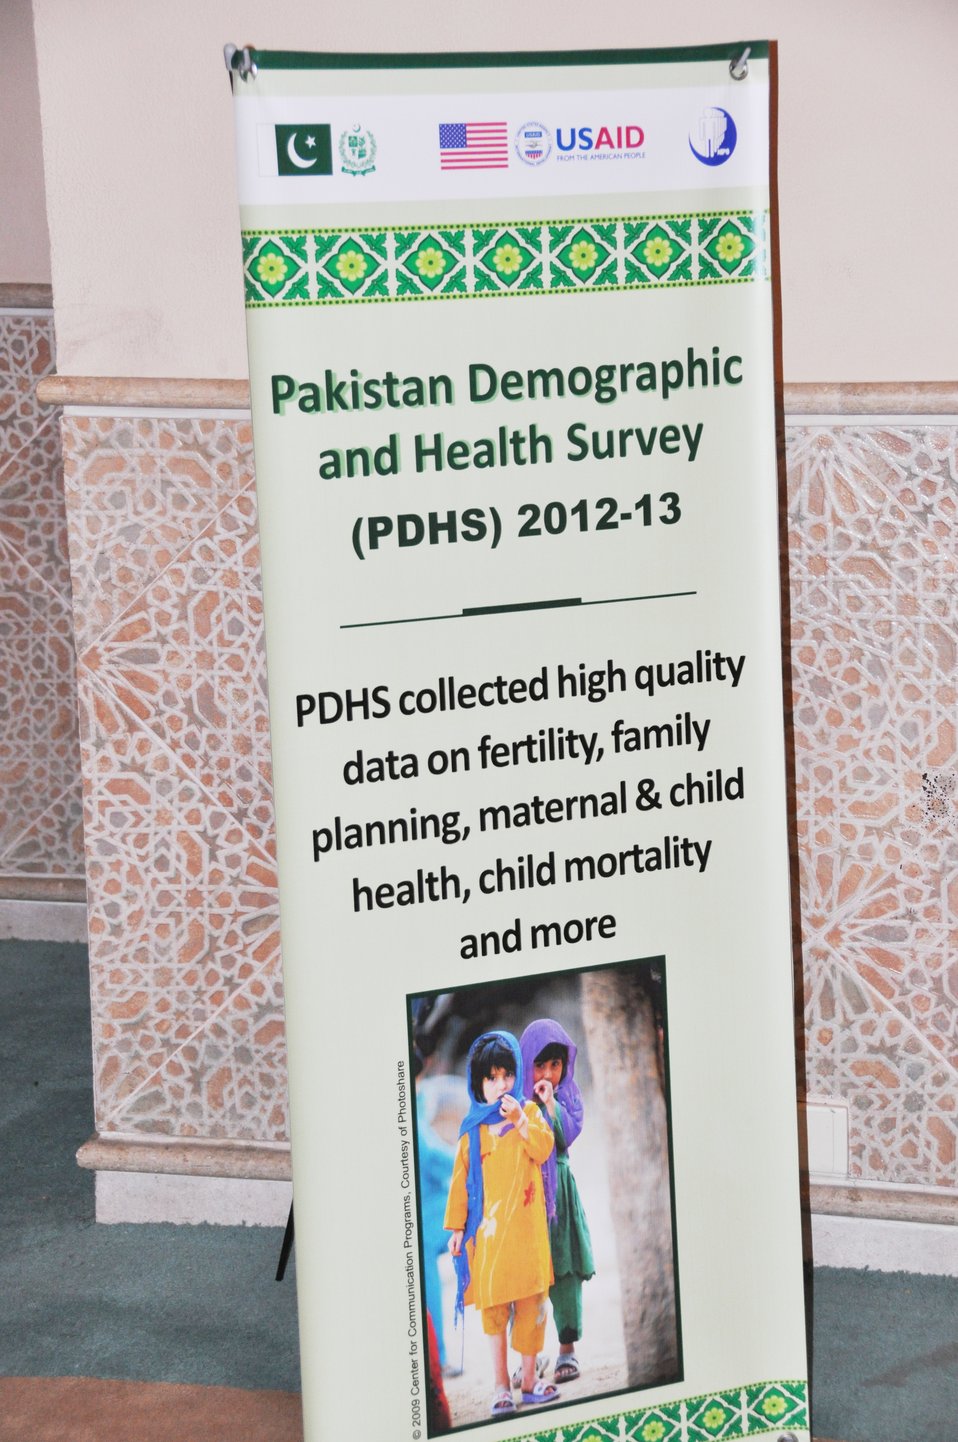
PHDS Launch

Speaking at the occasion, Ambassador Olson commented, “The rich data and findings from this robust survey will help the Government of Pakistan, provincial leaders, health officials, and development partners shape programs and policies to help improve the health of the Pakistani people.”